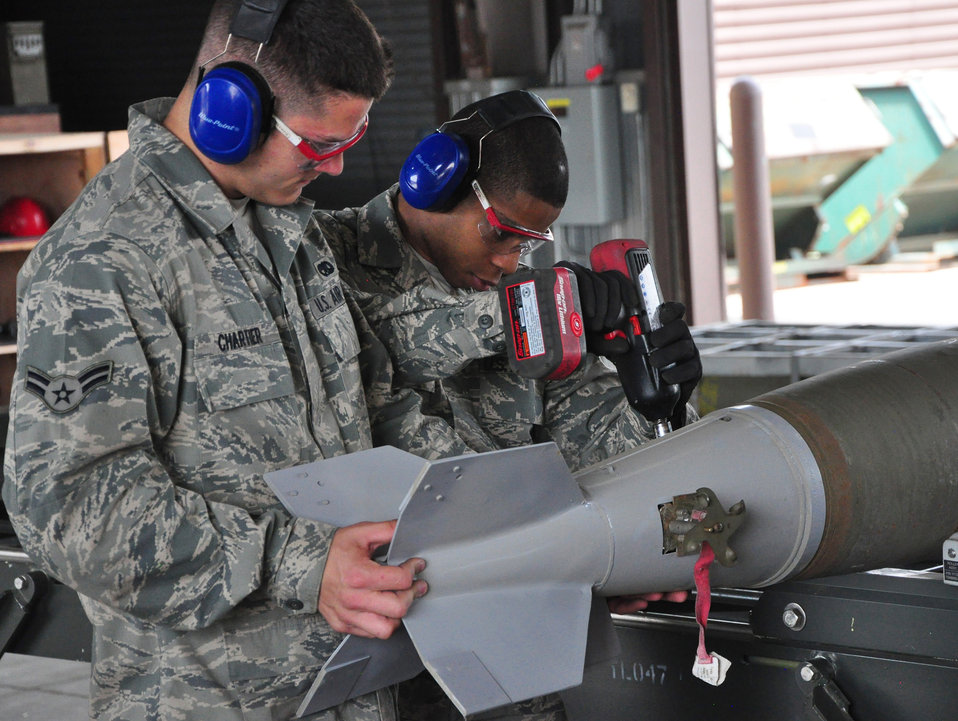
Loading munitions

Two Airmen prepare a bomb May 3, 2011, at Osan Air Base, South Korea.